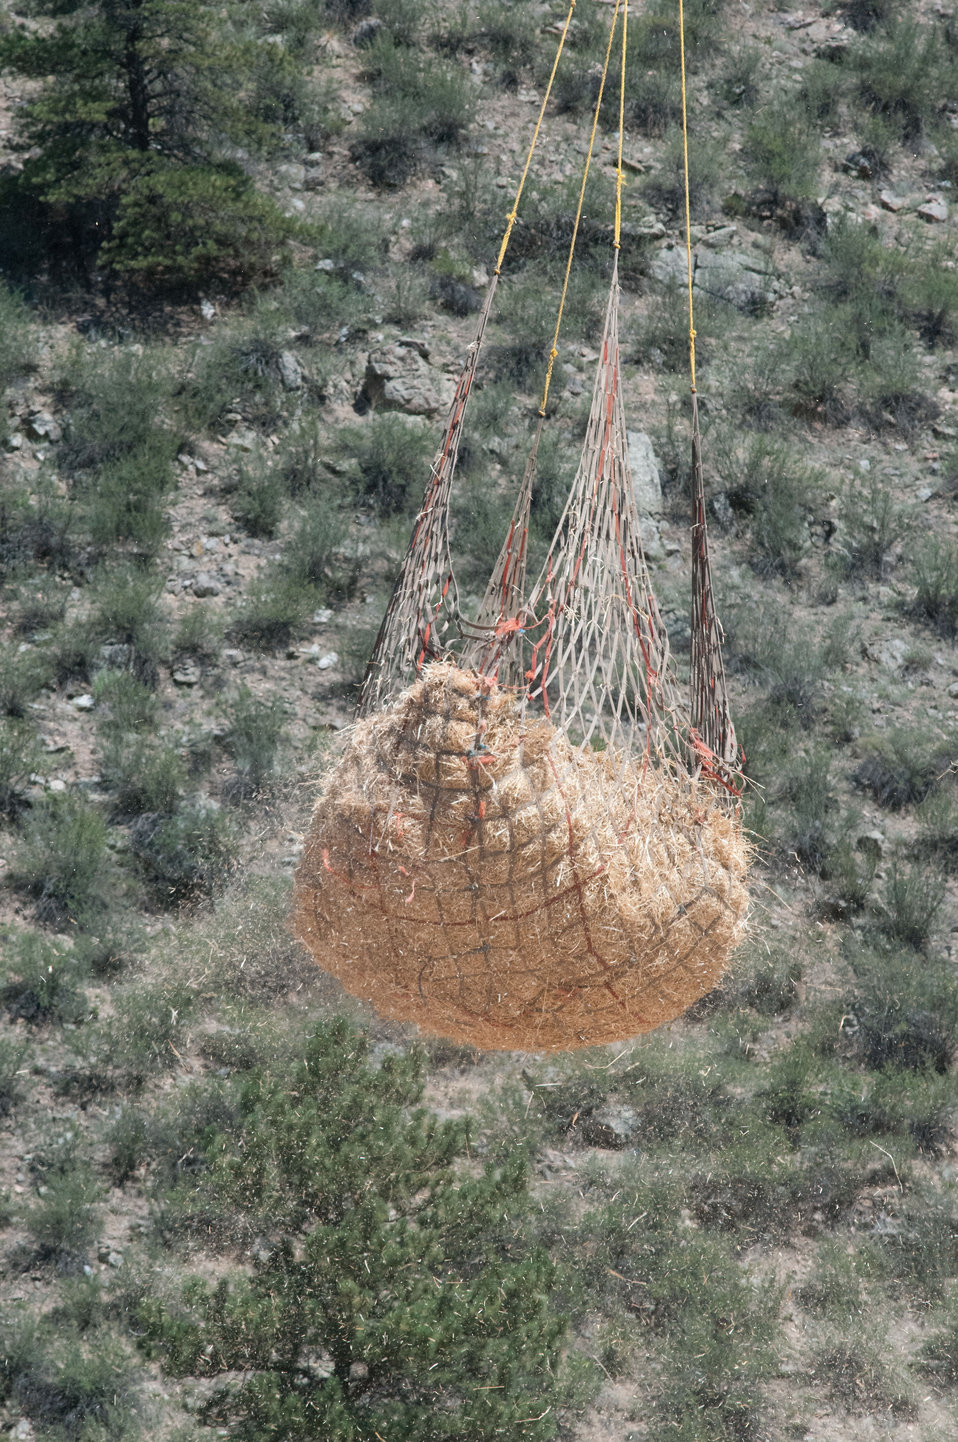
1,400 pounds of straw is lifed into the Colorado sky during the continuing aerial application of straw to mitigate soil and ash runoff from the mountainous terrain leading to Seaman Reservoir, drinking water resource for the City of Greeley, on Friday, July 20, 2012, near Ft. Collins, Colorado. Bell UH-1H (2-blade rotor) and A-Star Model B (3-blade rotor) aircraft launched from a landing zone at the foot of the reservoir spillway. The 100-150-foot sling lines hold and release loads of certified straw weighing 1,400 – 2,000 pounds. 4-person load crews and heavy equipment operators unloaded 1,000 pound straw bales from tractor trailer rigs, stack them near the pickup point, then bring the bales onto cargo nets, open then loosen and adjust the load on cargo nets for helicopters to lift and drop them onto barren, burned out tributary lands. Forest service lands received straw, while private and other lands receive a seed mix and straw to promote ground cover plant growth on ash-covered lands. In total, 1,800 tons of straw will be applied during the 14-day operation. One quarter of the cost was paid by the City of Greeley and the U.S. Department of Agriculture funded the remainder. The Hewlett Gulch Fire was started by a camper’s alcohol stove, on May 14, at the saddle of a picturesque mountain ridge along the Hewlett Gulch Trail of Poudre Canyon, in the Roosevelt National Forest, 60 miles north of Denver. At it’s more than 400 firefighters were battling fires being pushed by 50 mph winds that helped blacken over 12-square-miles of dry ground cover, brush and trees. Many of the trees were already dead and tinder dry from beetle-kill. The water in the reservoir remains clean and clear, while downstream water flow has gone from famous Colorado clear water to nearly black flows of water heavily laden with ash, silt, and burnt debris that recent thunderstorms have already washed down from the mountainsides.